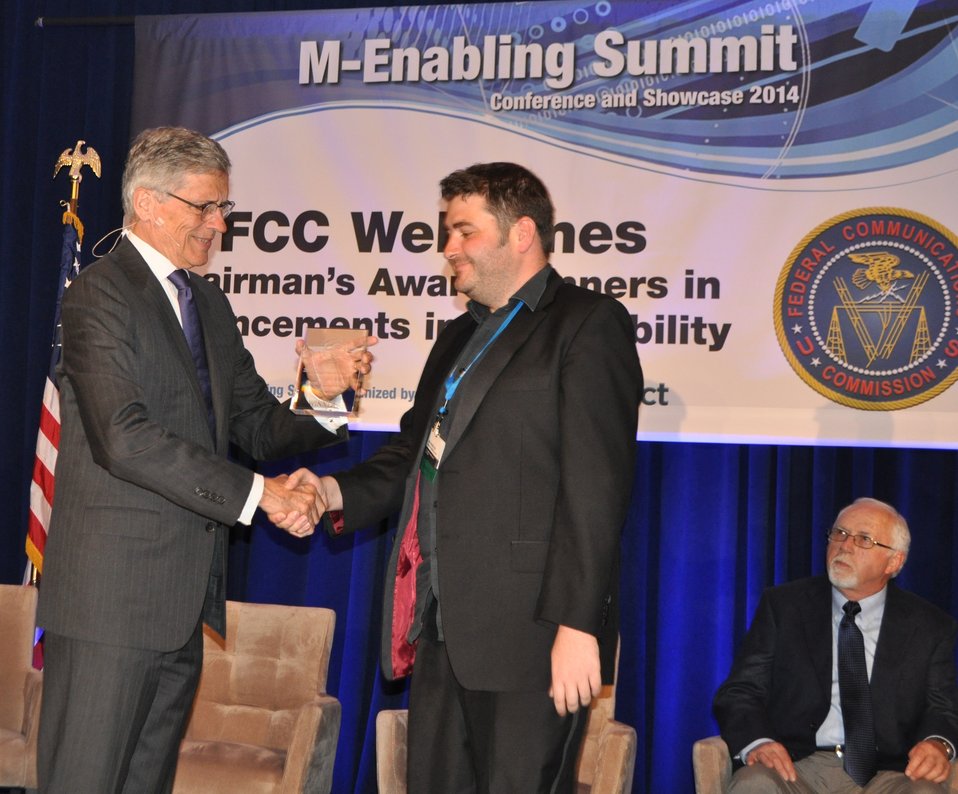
6.9.2014 Third Annual Chairman’s Awards for Advancement in Accessibility

Winner for category of Intellectual and Developmental Disabilities: Game Accessibility Guidelines: Ian Hamilton accepting the award.